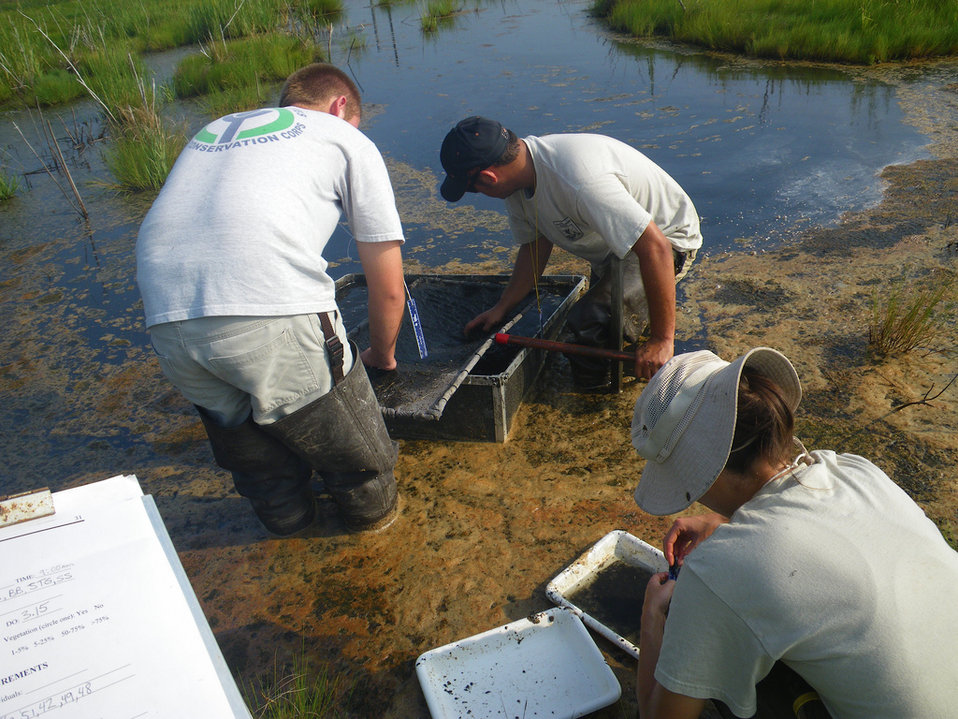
Vegetation monitoring

U.S. Fish and Wildlife Service